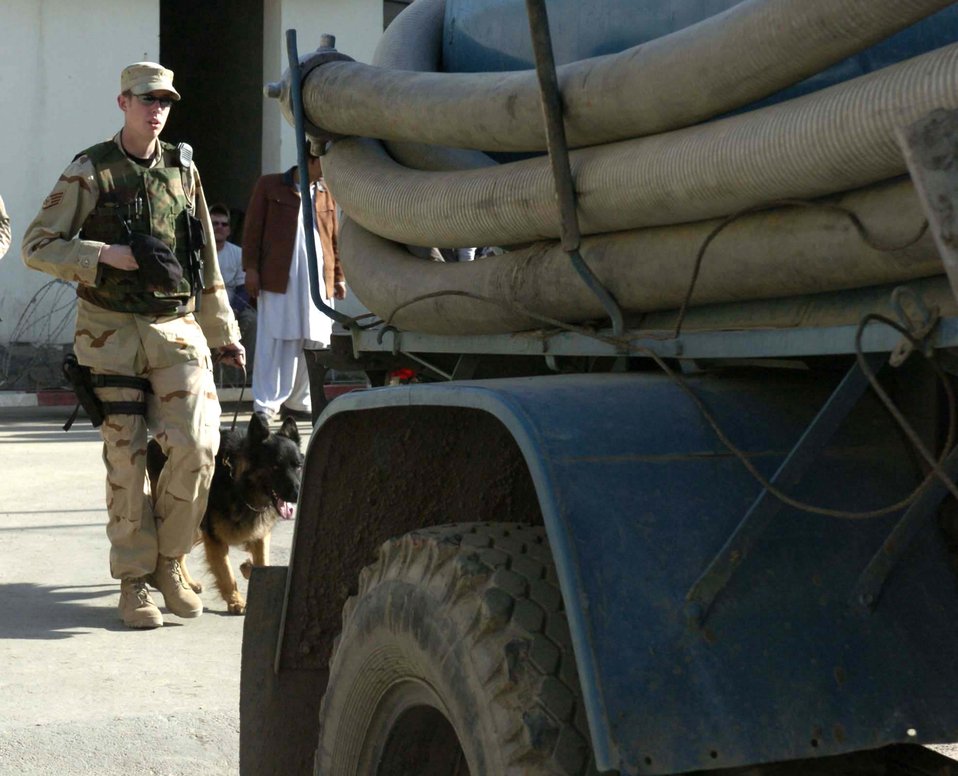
Airman, dog provide security for Afghanistan

KABUL COMPOUND, Afghanistan -- Staff Sgt. David Yepsen and his military working dog, Dax, prepare to search a vehicle that has just entered the compound. The two are the only Air Force canine team in Afghanistan. They are deployed supporting Operation Enduring Freedom from the 43rd Security Forces Squadron at Pope Air Force Base, N.C.